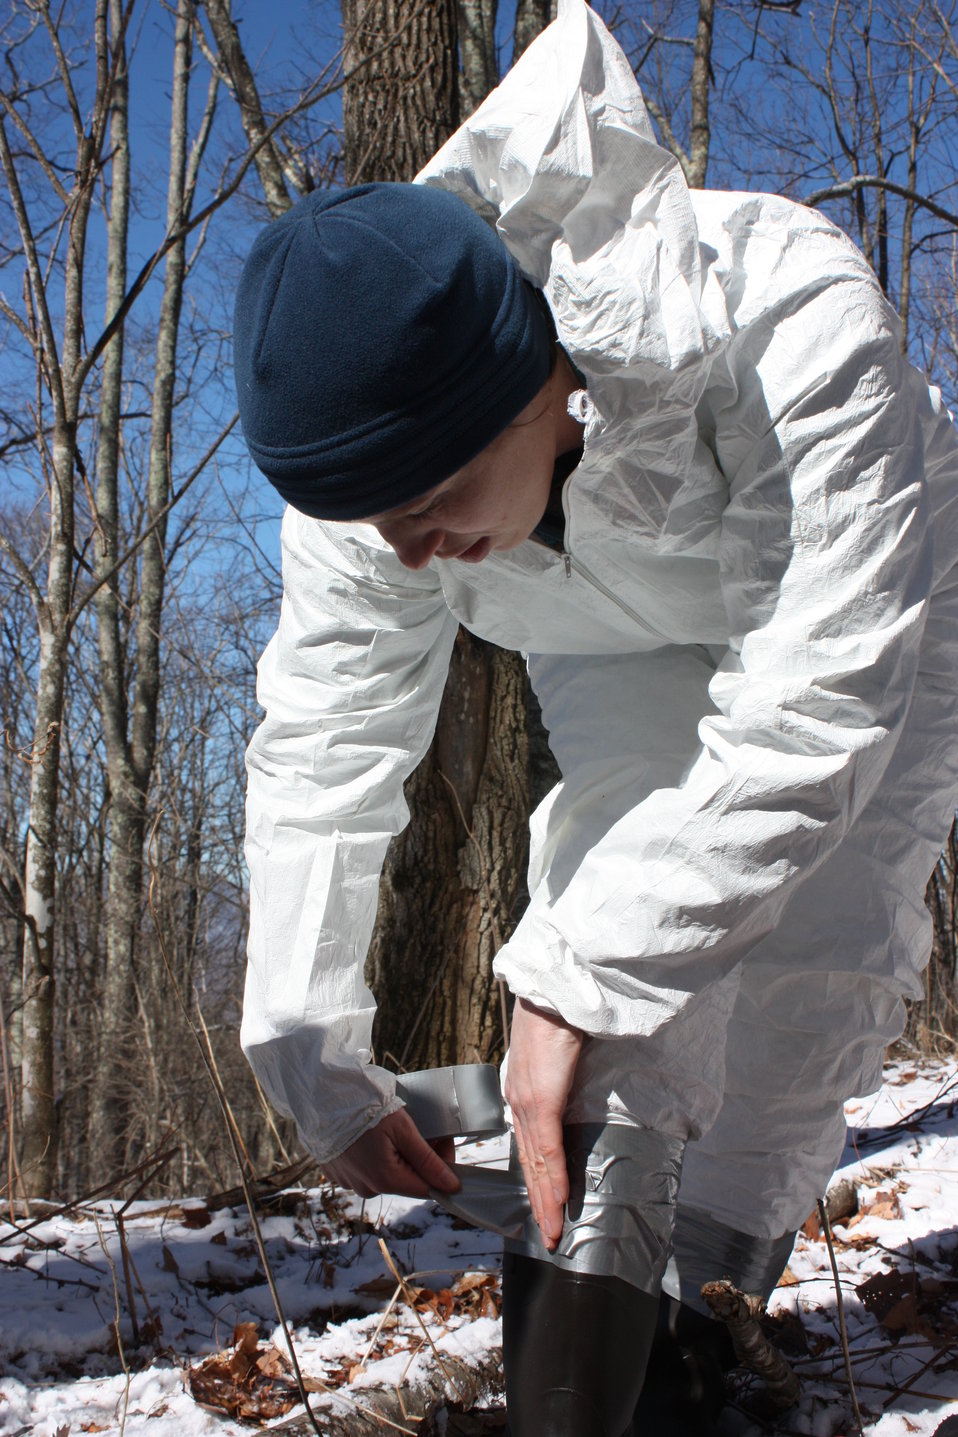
NCWRC biologist Cordie Diggins taping boot, preparing to enter NC mine for WNS survey